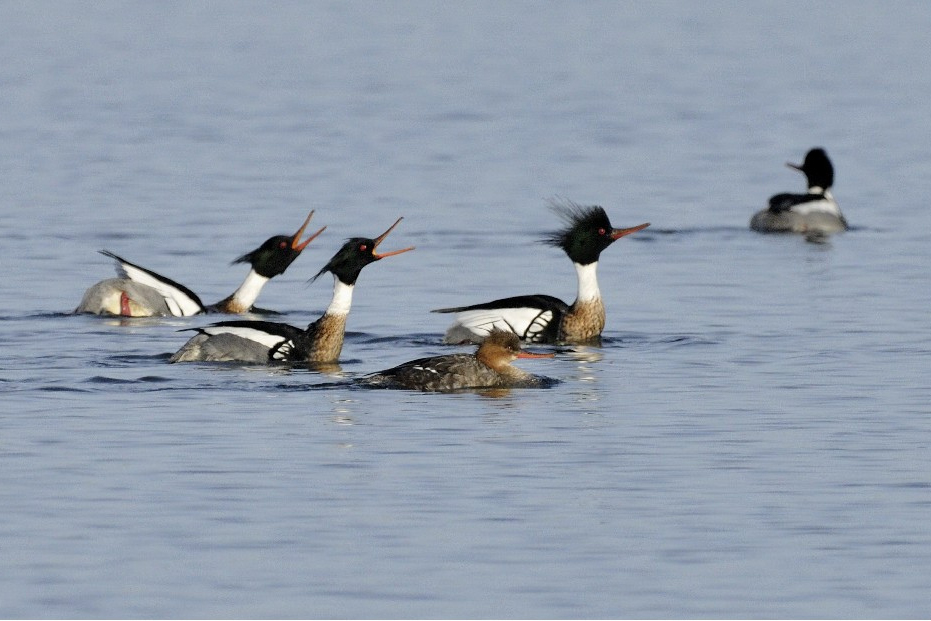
Photo of the Week - Red-breasted Mergansers (RI)

Photo of the Week - 4/15/2013

Male Red-breasted mergansers courting a single female at Conimicut Point Park in Warwick, RI.